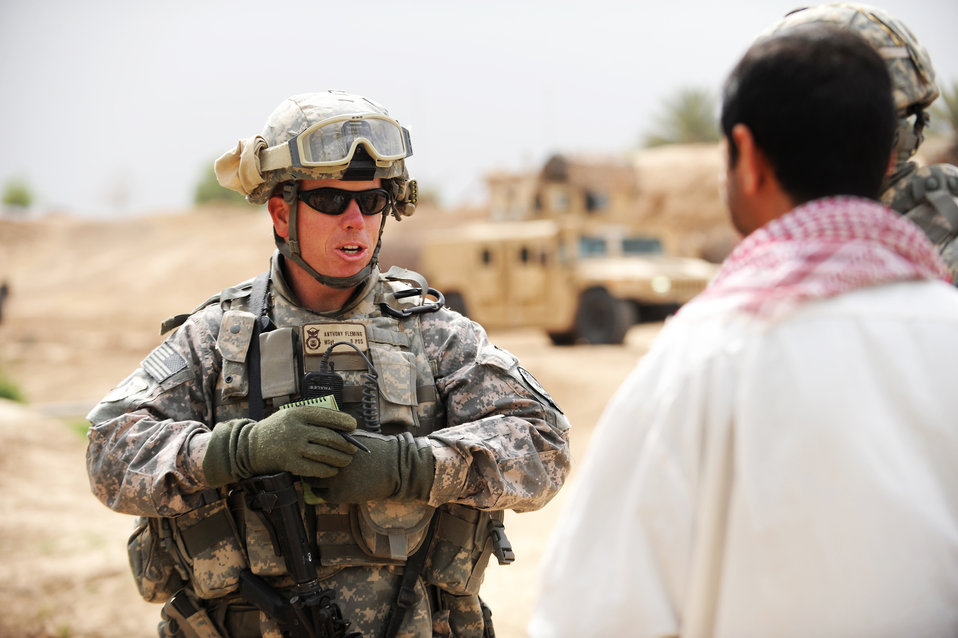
Joint Base Balad security forces Airmen patrol Iraq villages

Master Sgt. Anthony Fleming conducts an interview April 9 with an Iraqi villager from Bakr. He is assigned to the 532nd Expeditionary Security Forces Squadron at Joint Base Balad, Iraq.